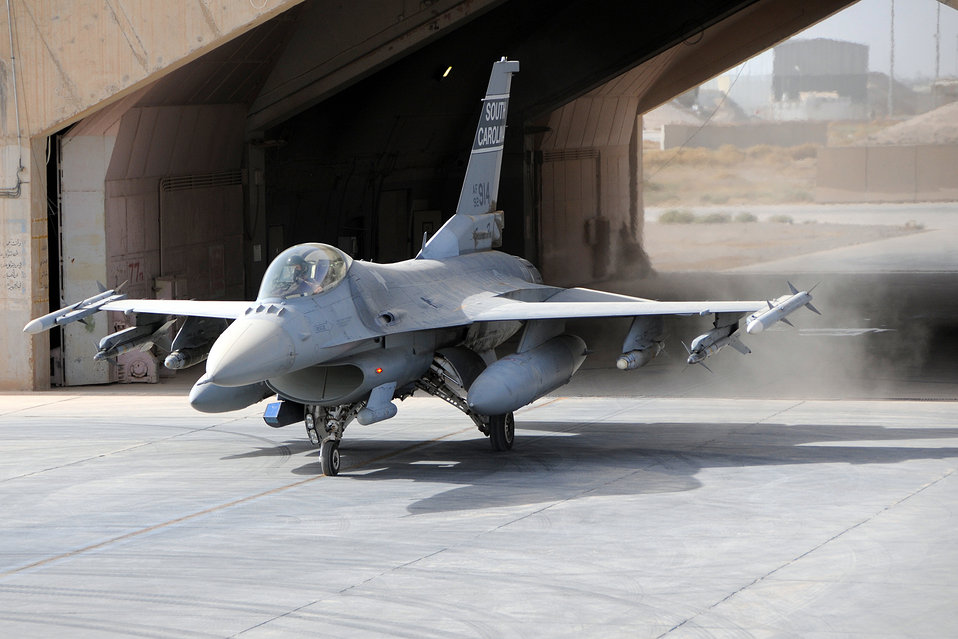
Time to go

Capt. David Way and his F-16 Fighting Falcon launch from Joint Base Balad, Iraq, on an alert mission June 24, 2010. Captain Way is a fighter pilot with the South Carolina Air National Guard's 157th Fighter Squadron at McEntire Joint National Guard Base, S.C.